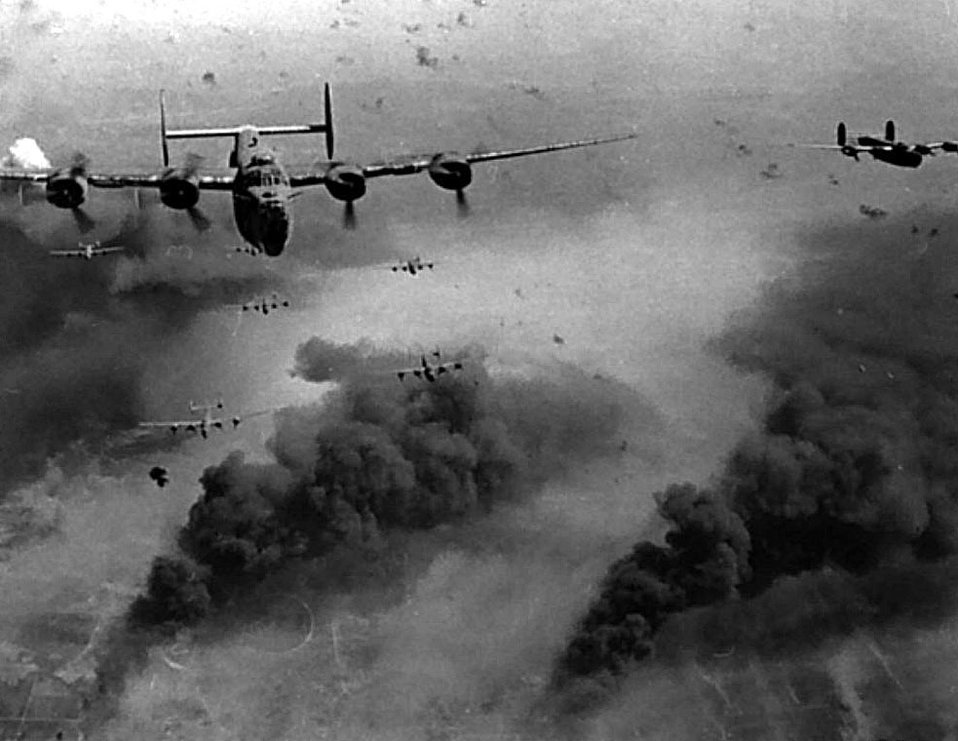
B-24s

1940's -- B-24s